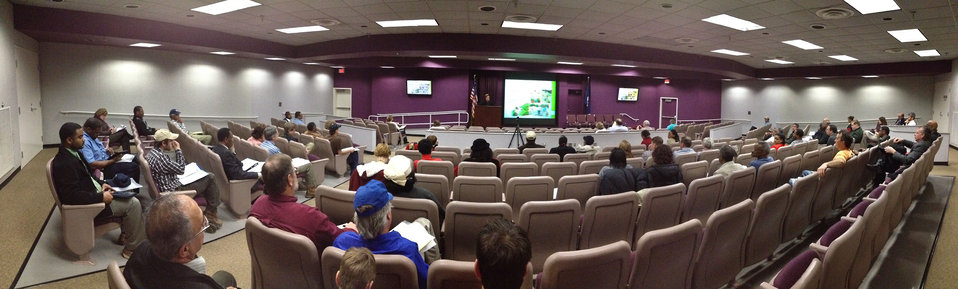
(Virtual panorama) “Virginia State University (VSU). U.S. Department of Agriculture (USDA) and Virginia Farmers Working Together” outreach workshop in the VSU, L. Douglas Wilder building on Thursday, March 7, 2013, in Petersburg, VA. Due to the preceding day's snow in the Northern Virginia region, only 85 of the 105 registered farmers attended the event.